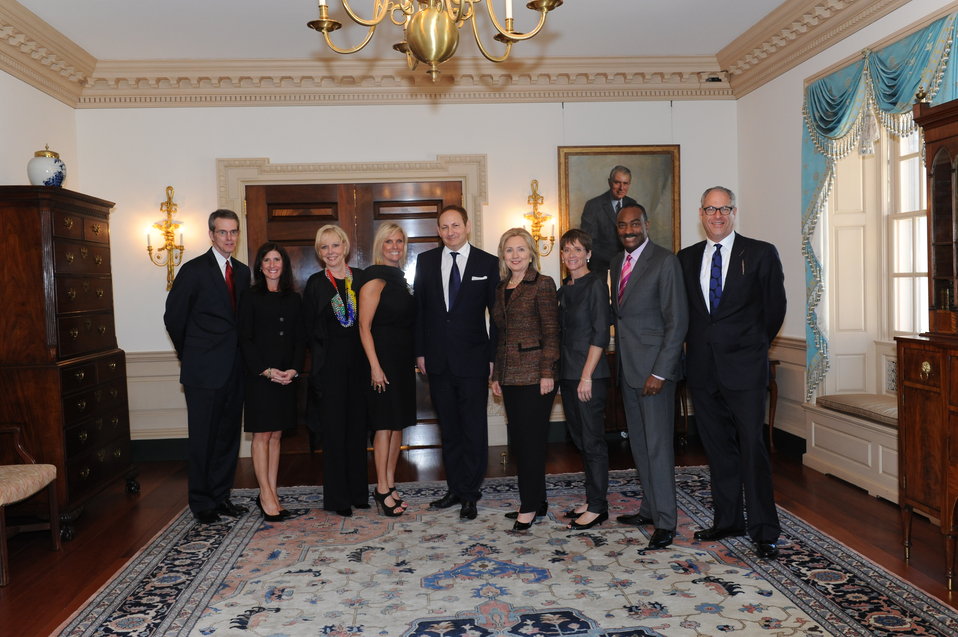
Secretary Clinton Poses for a Photo With Partners of the M∙A∙C AIDS Fund

U.S. Secretary of State Hillary Rodham Clinton poses for a photo with partners of the M∙A∙C AIDS Fund, a public-private partnership to expand critical medical and emergency support services for survivors of rape and sexual assault in South Africa, at the U.S. Department of State in Washington, D.C., on June 2, 2011.